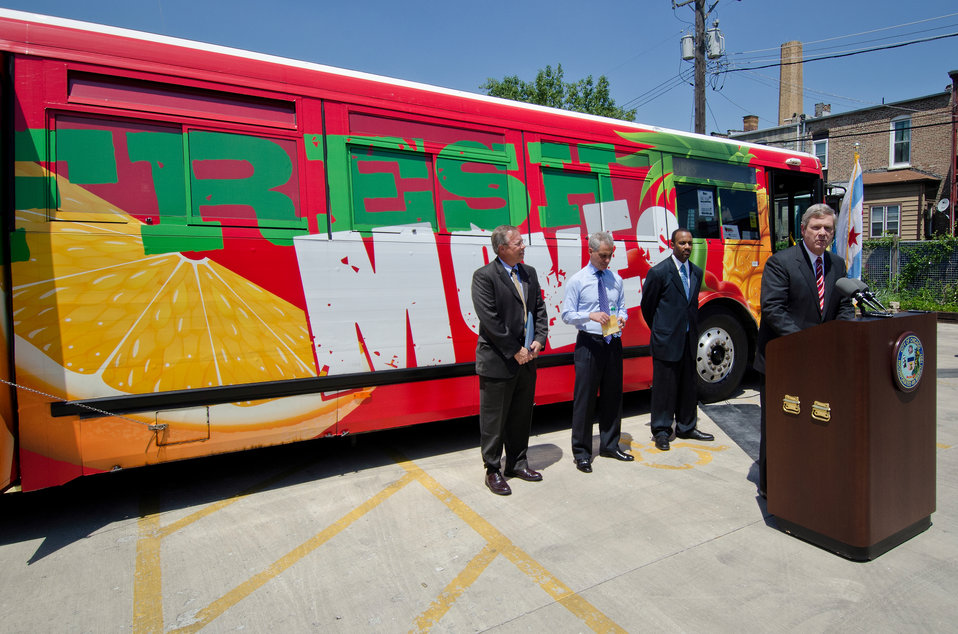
From left: Robert Flider, Illinois Department of Agriculture, Chicago Mayor Rahm Emanuel, Steve Casey, Fresh Moves and Agriculture Secretary Tom Vilsack. Secretary Vilsack highlighted the Obama administrations efforts to increase access to healthy food in communities throughout the country by visiting the Fresh Moves Mobile Market Bus, a renovated Chicago Transit Authority Bus in Chicago, Illinois on Friday, June 8, 2012. The bus delivers fresh, affordable fruits and vegetables to Austin and North Lawndale, two neighborhoods with limited access to fresh produce. Secretary Vilsack commended Mayor Emanuel’s commitment to healthy food access and announced United States Department of Agriculture support for the expansion of mobile markets in Chicago, as well as a research project to assess the impact of mobile markets as a strategy to increase healthy food access in rural and urban communities.